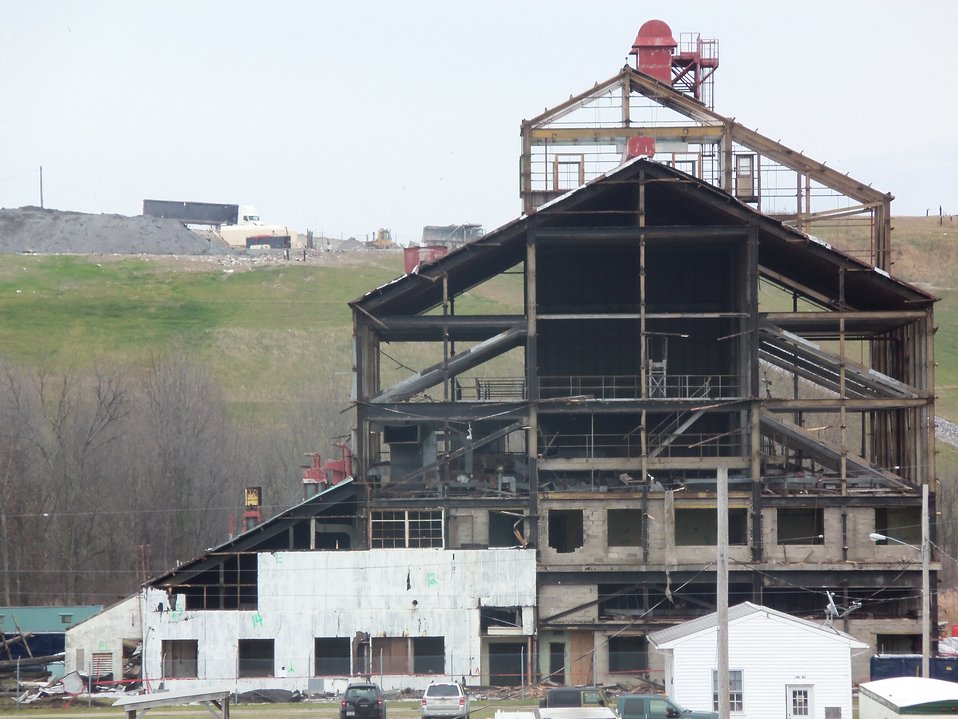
Building 401 shell view from cap.

Activities from the Niagara Falls Storage Site, which is associated with the former Lake Ontario Ordnance Works. Formerly Utilized Sites Remedial Action Program (FUSRAP), a program initiated in 1974 to identify, investigate and clean up or control sites that were part of the Nation's early atomic energy and weapons program. Activities at the sites that are eligible for FUSRAP were conducted by Manhattan Engineer District (MED) or the Atomic Energy Commission (AEC), both predecessors of the Department of Energy (DOE). The U.S. Army Corps of Engineers was assigned management of FUSRAP by Congress in 1997.